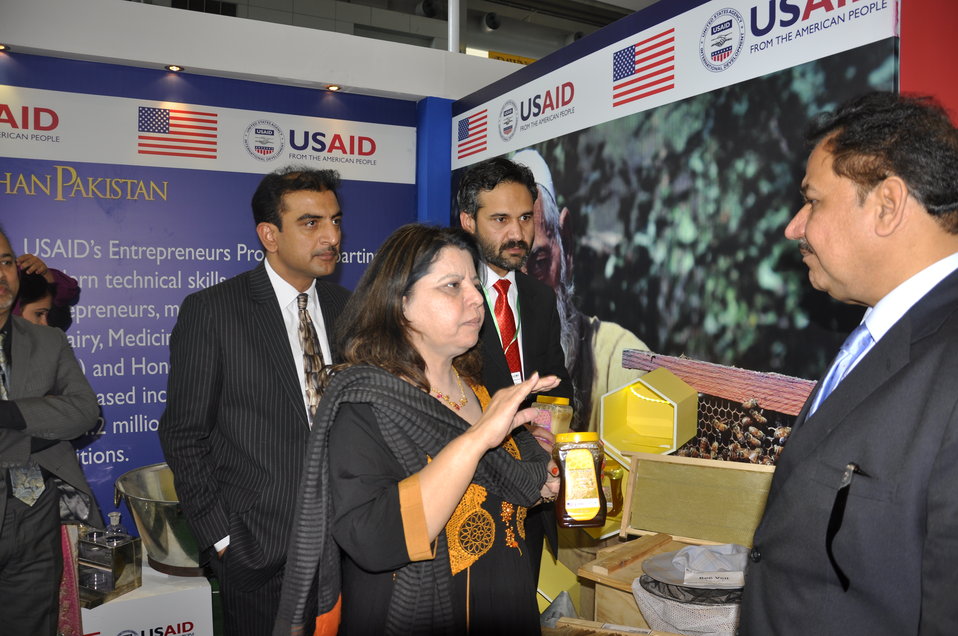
Provincial Minister for Agriculture Dr. Farrukh Javed interacting with USAID's representative, Mr. Ghani Khan Marwat at Dawn Sarsabz Pakistan Agri Expo